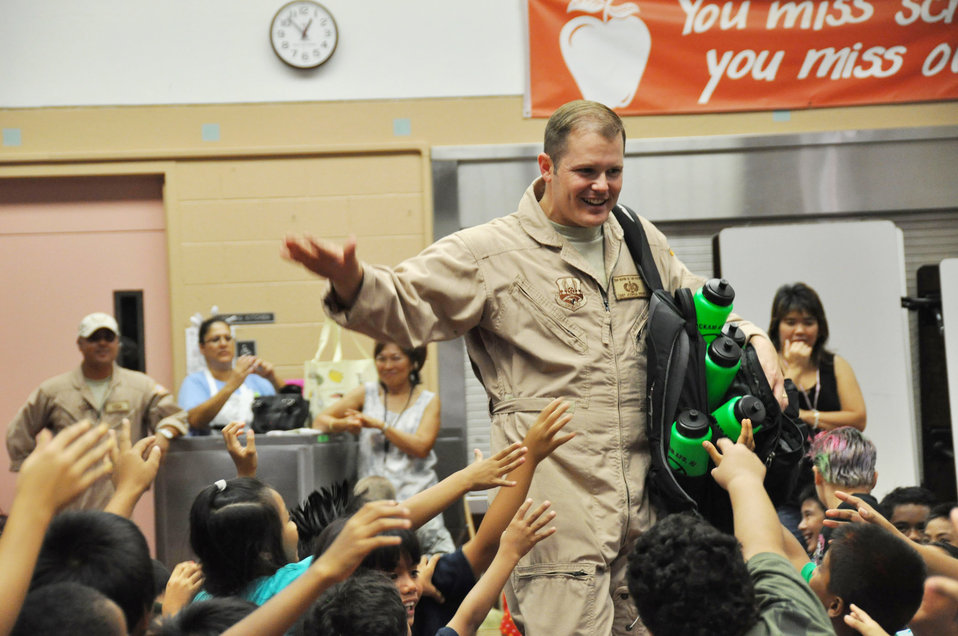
Band of the Pacific-Hawaii participates in Red Ribbon Week

Tech. Sgt. Joshua Fedele interacts with students at K Elementary School Oct. 22, 2009, in Waipahu, Hawaii. Sergeant Fedele is a Band of the Pacific-Hawaii saxophone player. The band performed a series of six concerts for local elementary schools for Red Ribbon Week, a program aimed at reinforcing children's decisions to stay away from drugs and make positive decisions in life.